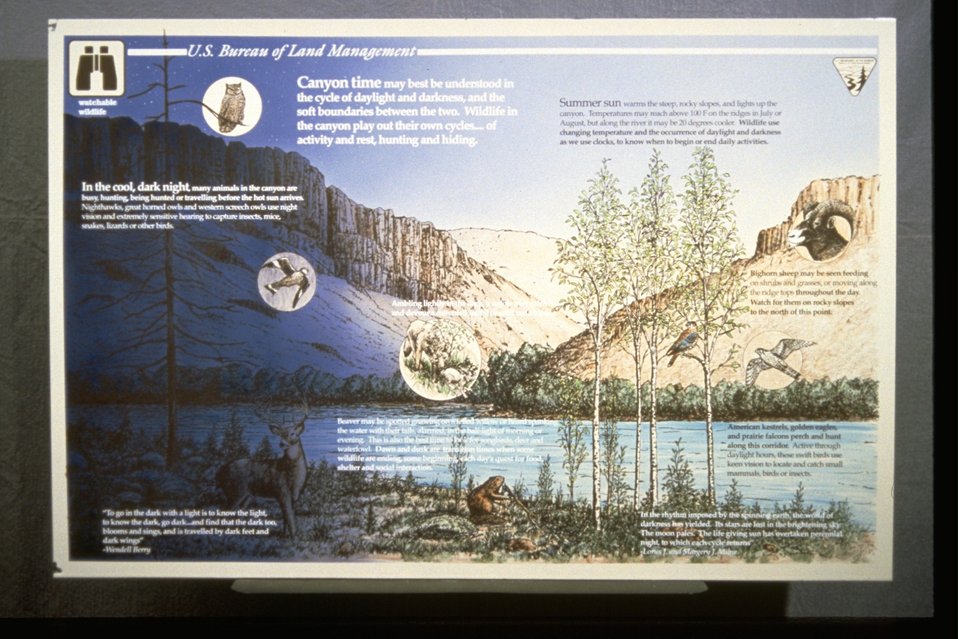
Close-up of interpretive panel near Yakima River.